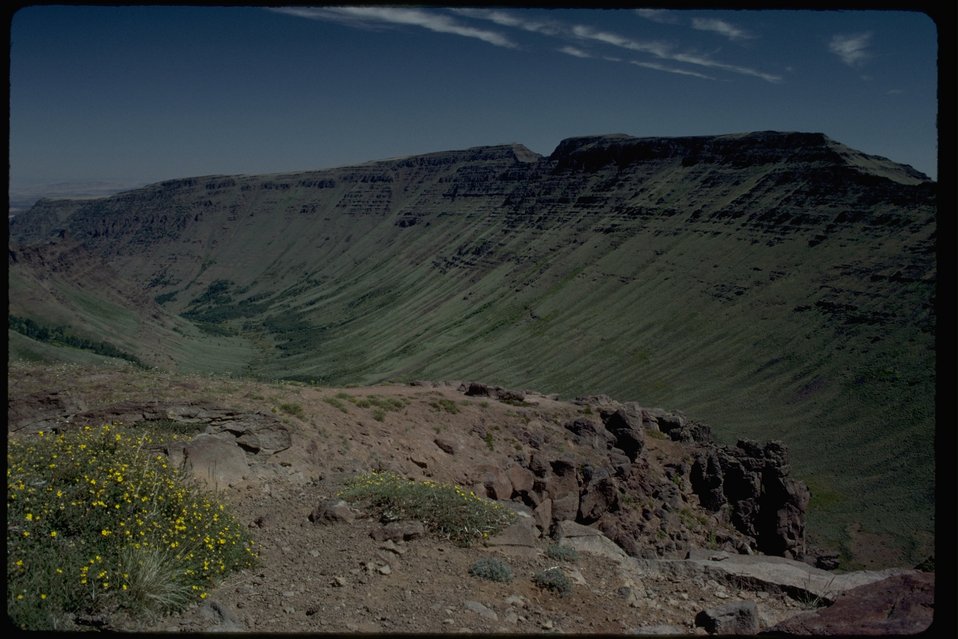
Classic glacial valley in Kiger Gorge, Steens Mountain, Oregon.